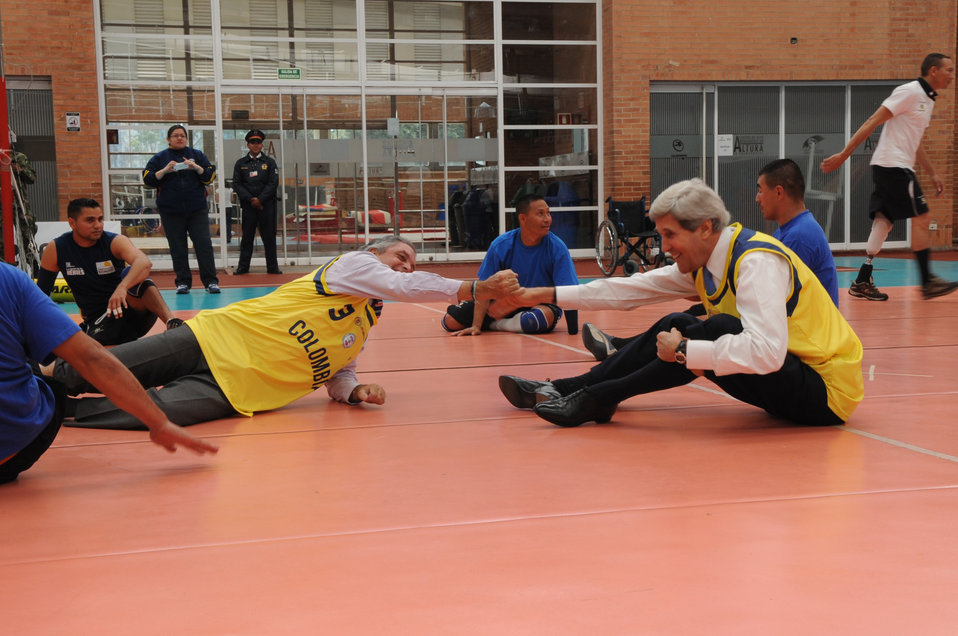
Secretary Kerry Celebrates a Point With Coldeportes Director Botero

U.S. Secretary of State John Kerry celebrates a point with Coldeportes Director Andres Botero during a visit with wounded veterans and law enforcement officers in Bogota, Colombia, on August 12, 2013.